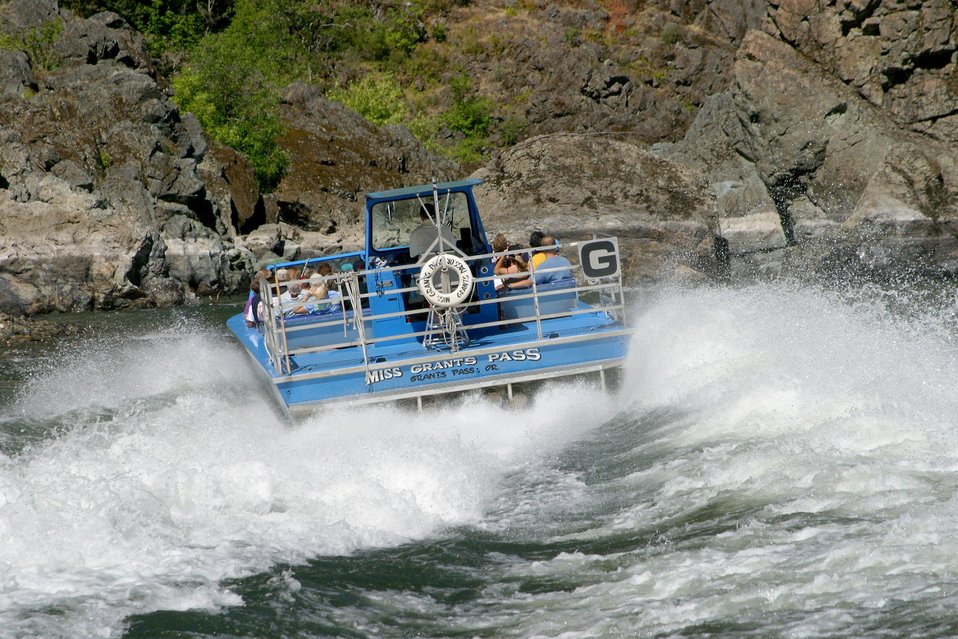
Jet boat entering Hellgate Canyon.